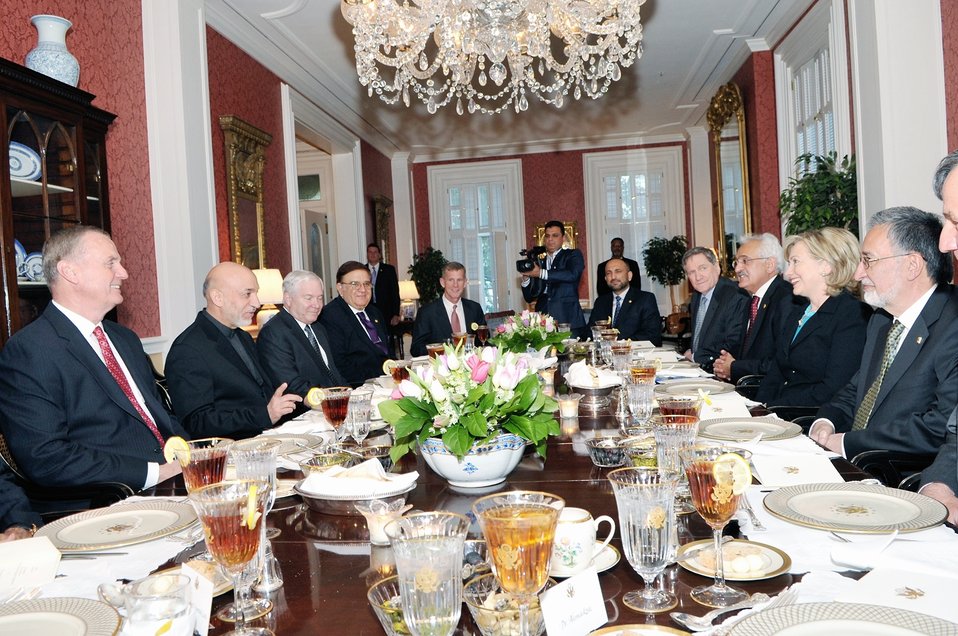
Secretary Clinton Hosts Dinner for Afghan President Karzai

U.S. Secretary of State Hillary Rodham Clinton hosts a dinner in honor of President of the Islamic Republic of Afghanistan Hamid Karzai at the Blair House, Washington, D.C., May 10, 2010.